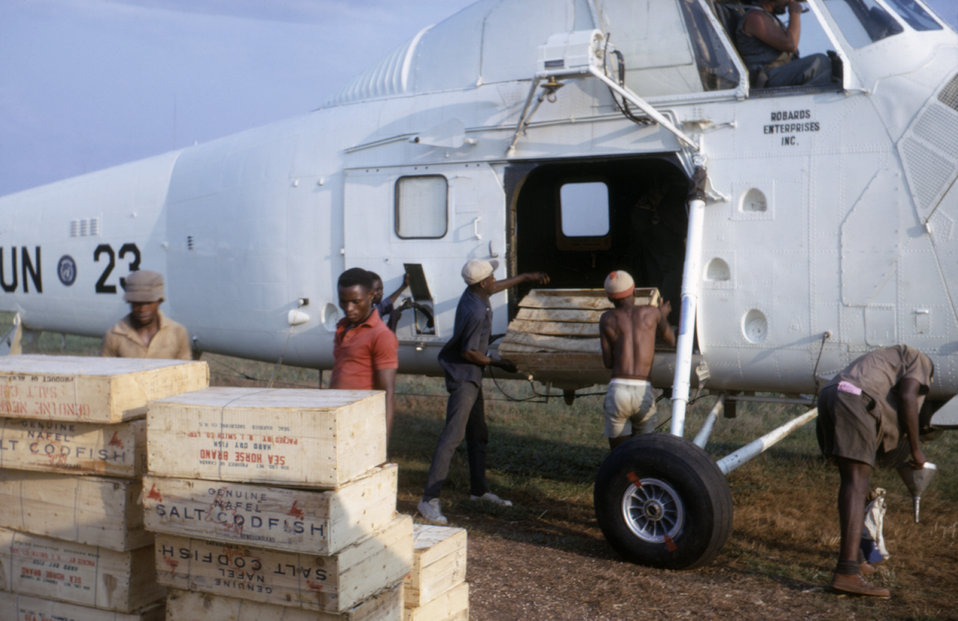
This photograph showed members of the Nigerian-Biafran civil war relief team unloading crates of codfish, which were airlifted from either of the Nigerian cities of Calabar, or Port Harcourt.